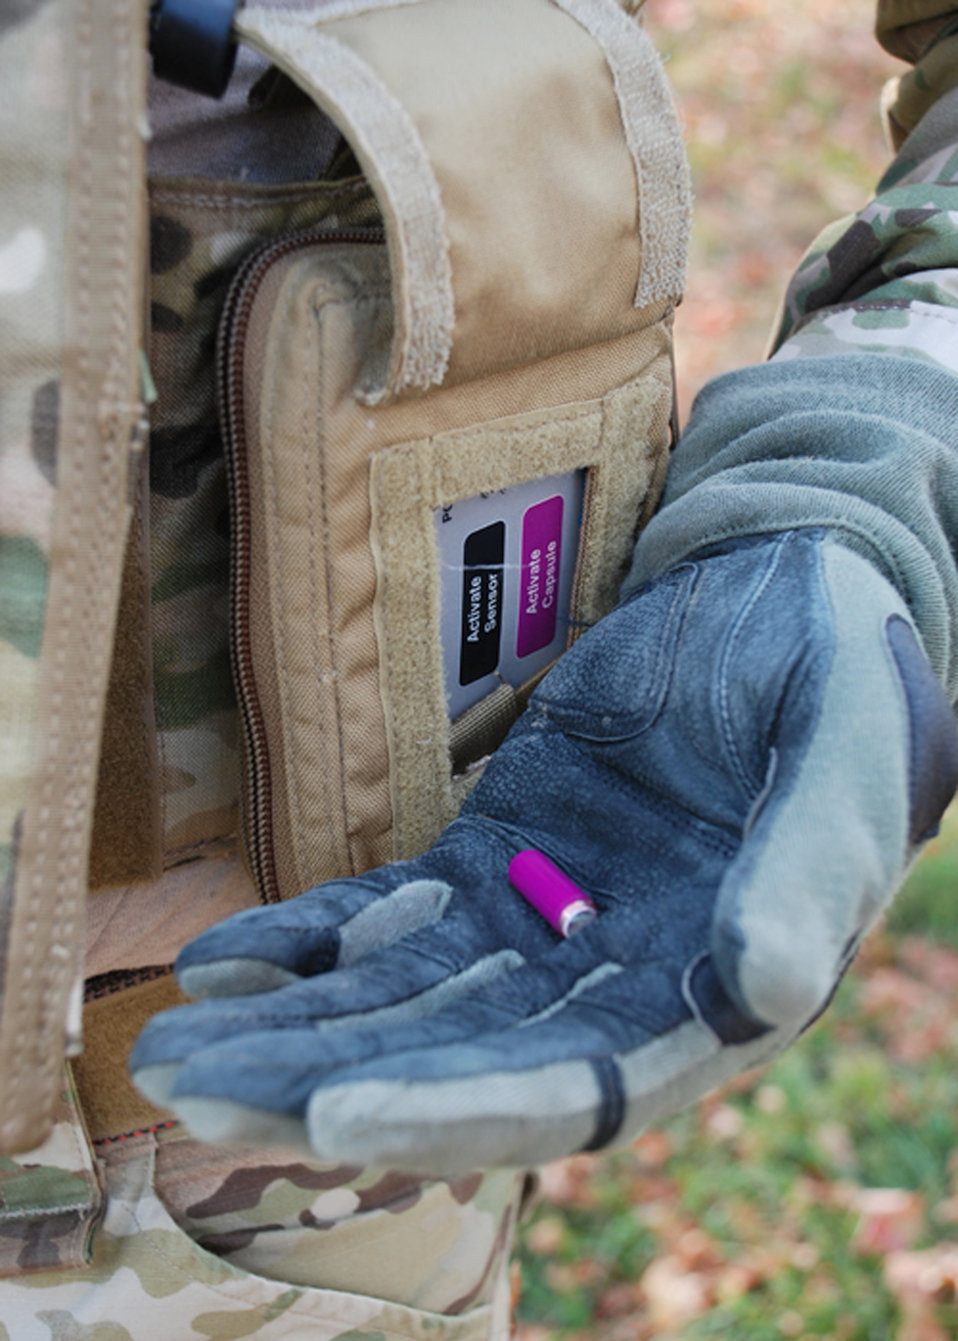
BALSM

Master Sgt. Robert Bean holds a wireless capsule that when ingested, measures core body temperature Oct. 12, 2010. A receiver unit worn on Sergeant Bean's vest transmits the information to a computer for health status monitoring. The capsule is part of the Battlefield Automatic Life Status Monitor being developed by QinetiQ in coordination with the Human Effectiveness Directorate. Sergeant Bean is from the Air Force Materiel Command Aeronautical Systems Command, Battlefield Airman Branch.